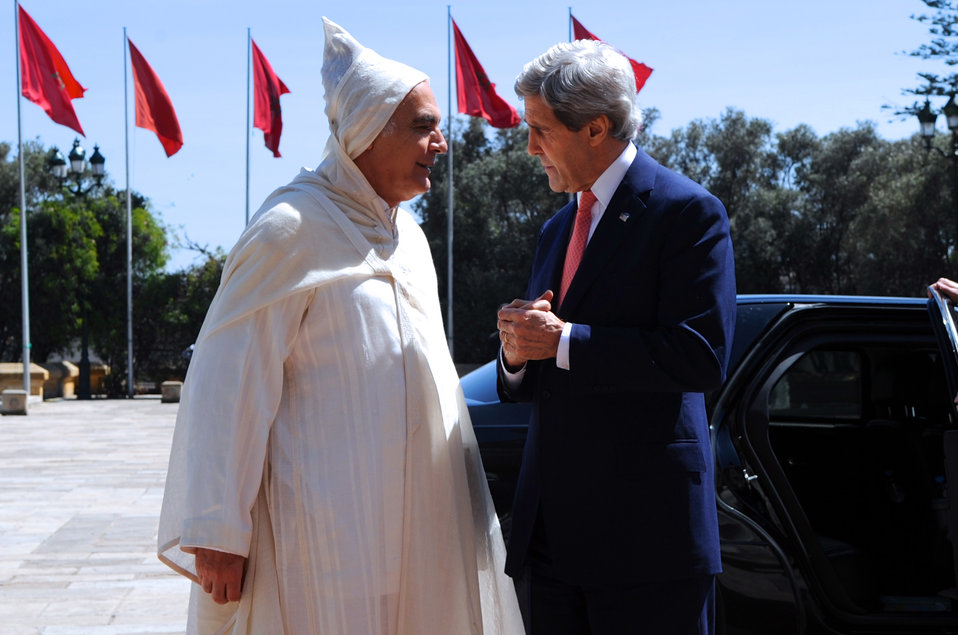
Secretary Kerry is Greeted by Moroccan Foreign Minister Mezouar at the Royal Palace in Casablanca

U.S. Secretary of State John Kerry is greeted by Moroccan Foreign Minister Salaheddine Mezouar, dressed in traditional garments, before they visited King Muhammed VI at the royal Palace in Casablanca on April 4, 2014.